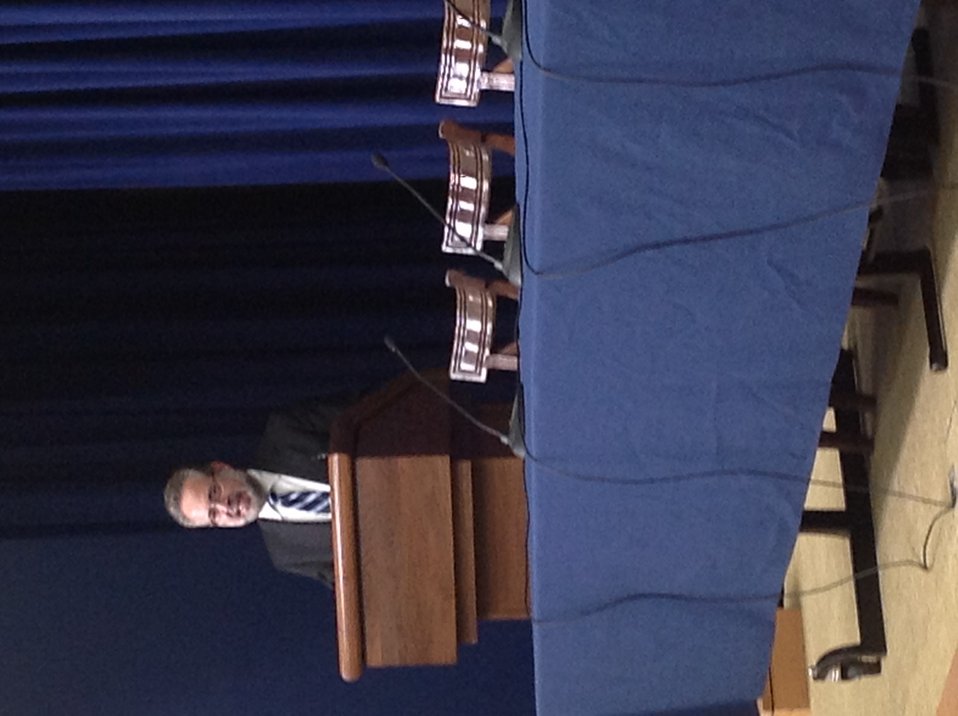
Dr. Ron Valdiserri

WH 2012 World Hepatitis Day Event